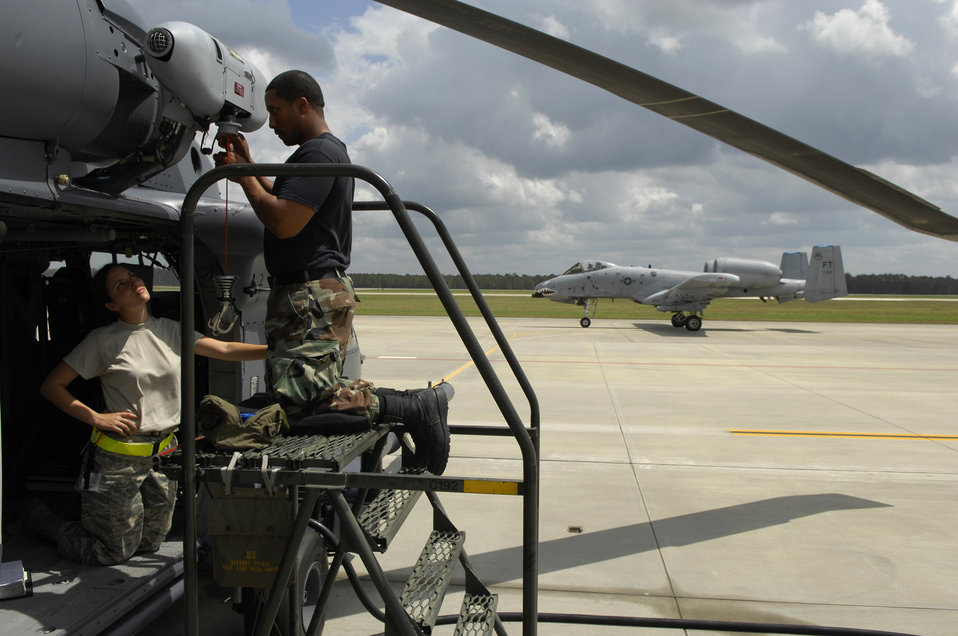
HH-60G Pave Hawk

Senior Airman Stephanie Secor and Staff Sgt. Ray Campbell work on an HH-60G Pave Hawk helicopter hoist cable April 1 at Moody Air Force Base, Ga., as a Moody-assigned A-10 Thunderbolt II heads out on a training mission. Airman Secor and Sergeant Campbell are electrical and environmental technicians with the 723rd Aircraft Maintenance Squadron.